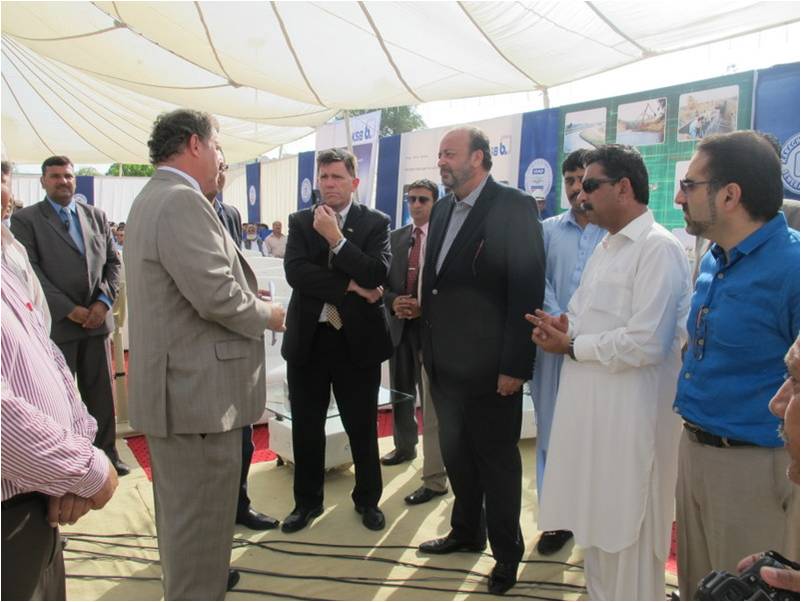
US Consul General Michael Dodman at the event